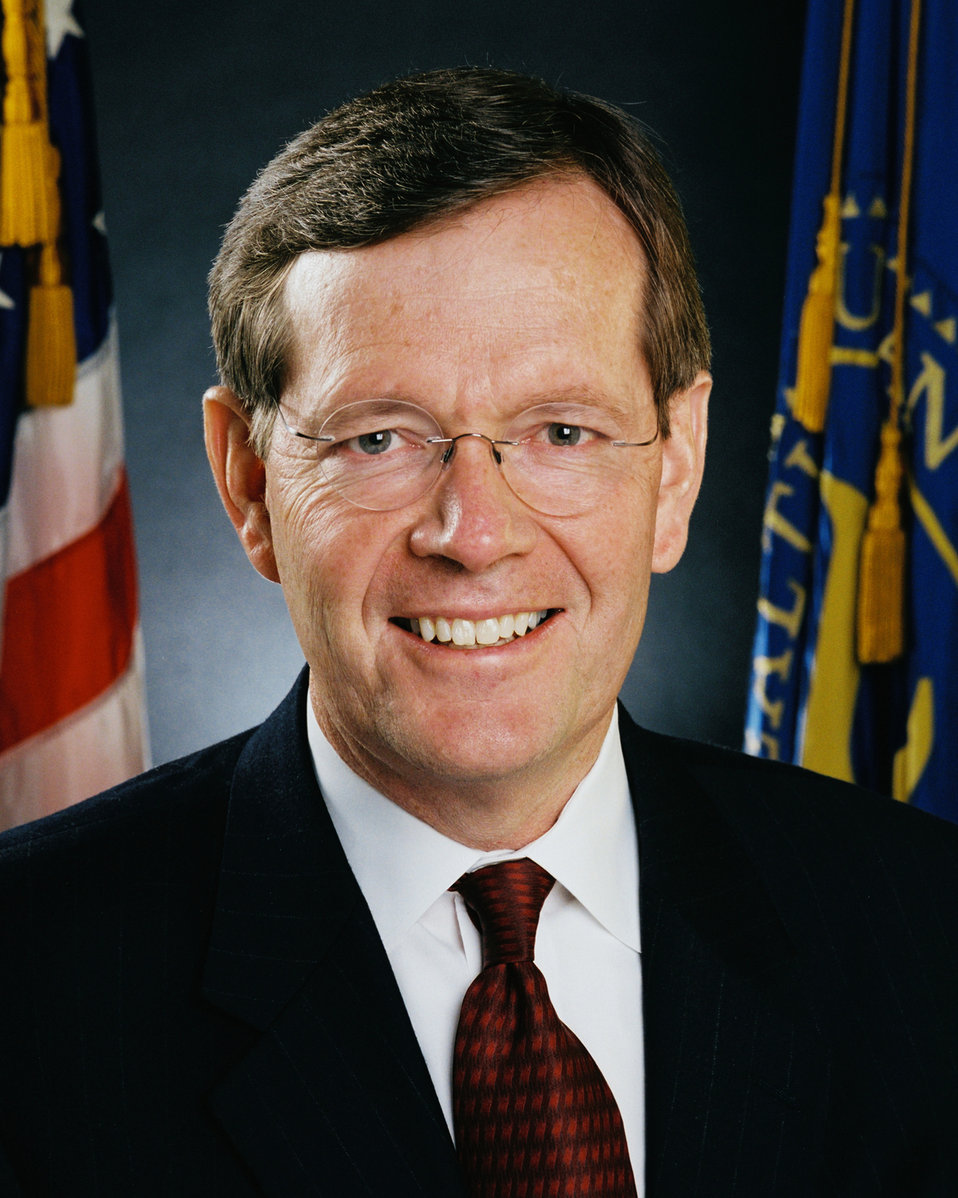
This 2005 portrait featured Michael O. Leavitt, the Secretary of Health and Human Services.